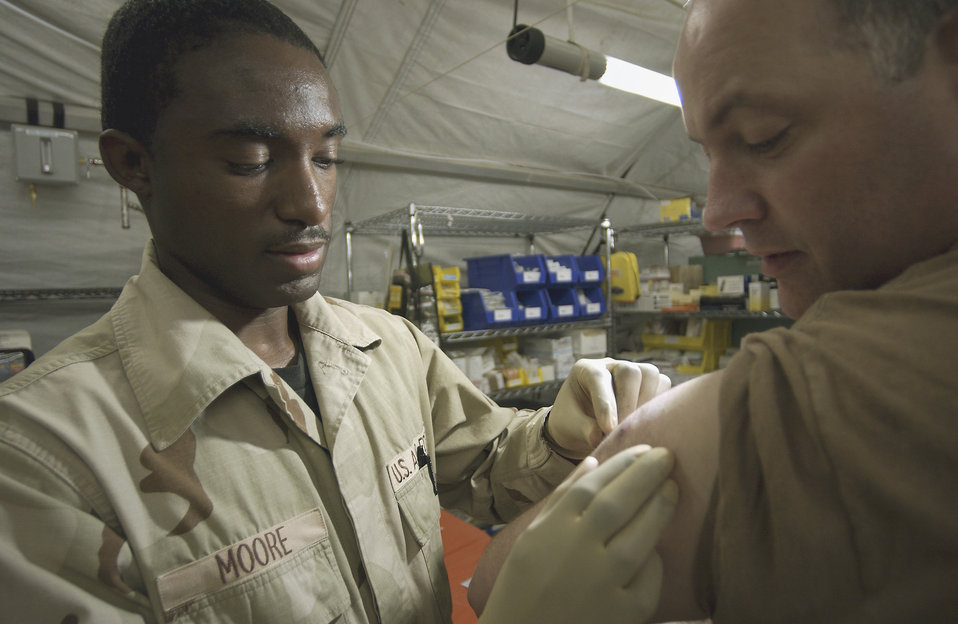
Immunizing airmen

BAGHDAD INTERNATIONAL AIRPORT, Iraq -- Airman 1st Class Arthur Moore checks the smallpox vaccination of Master Sgt. Scott Elliott. Moore and the other medics from the 447th Expeditionary Medical Squadron here administer anthrax and smallpox to an average of 80 patients per week. Moore is a medical technician deployed here from the 96th Medical Operations Squadron at Eglin Air Force Base, Fla. Elliott is deployed here from the Air Force News Agency in Washington.